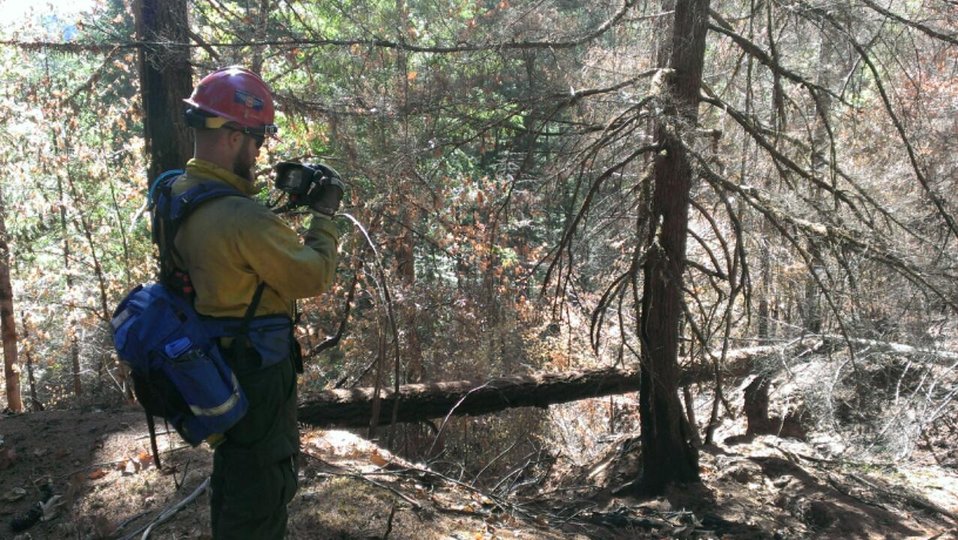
Prescott Helitack crewman uses a handheld Infrared (IR) camera on the Whiskey Complex Fire to look for hidden hot spots. The Whiskey Complex Fire in the Umpqua National Forest near Tiller, OR began by lightning on Jul. 26, 2013 by lighting has consumed approximately 17,891 acres and is 100% contained.